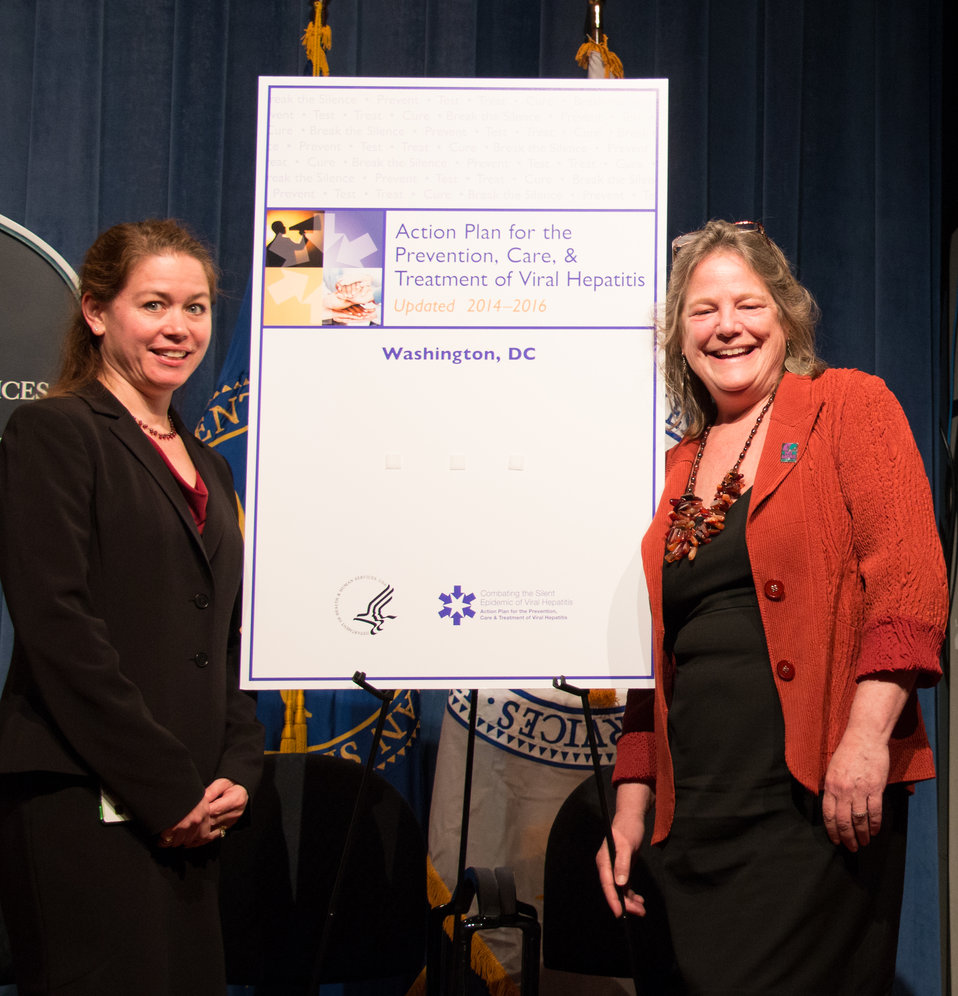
VHAP Launch (416 of 511)